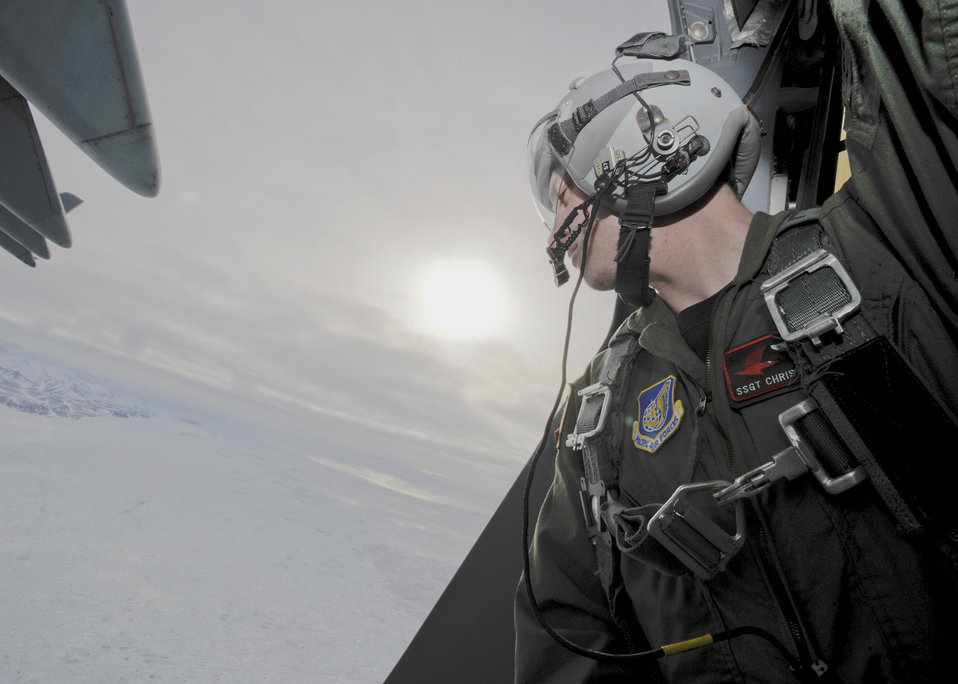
Elmendorf Airmen complete airdrop using 3-D weather technology

Staff Sgt. Chris McKnight checks his drop zone before deploying a sonde transmitter March 19, 2010, at Elmendorf Air Force Base, Alaska. Sergeant McKnight and his crew from the 517th Airlift Squadron participated in a combat simulation improved container delivery drop over Tin City, Alaska.